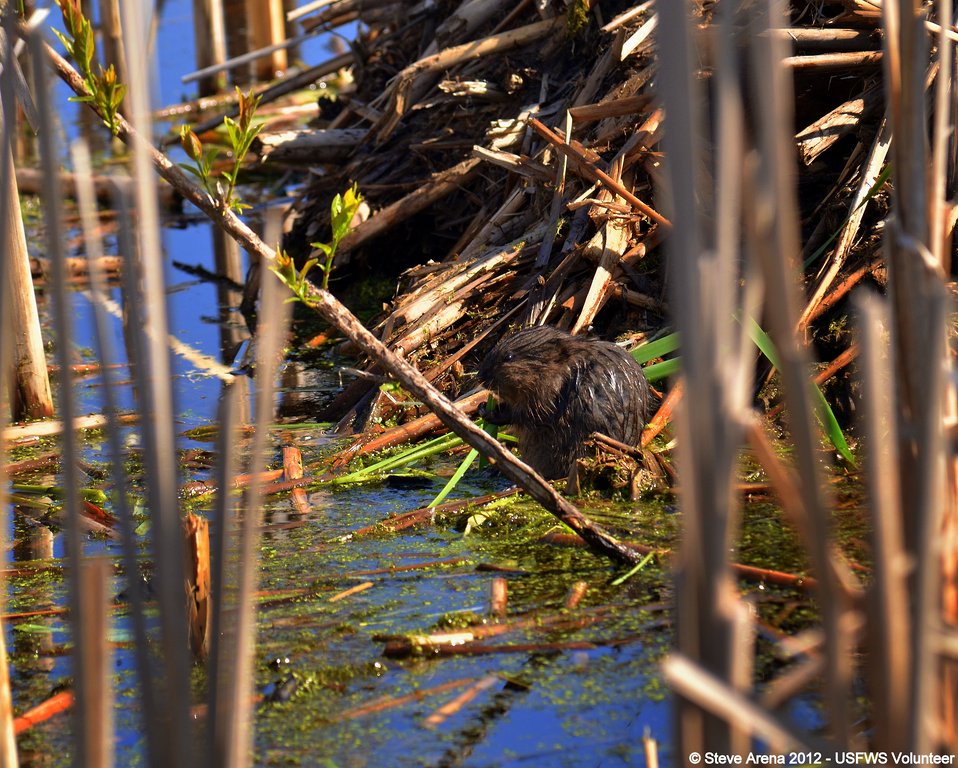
Muskrat (Ondatra zibethicus) Kit Great Meadows NWR, Concord, MA

Muskrat Kit Great Meadows NWR, Concord, MA

Credit: Steve Arena/USFWS

18 May 2012